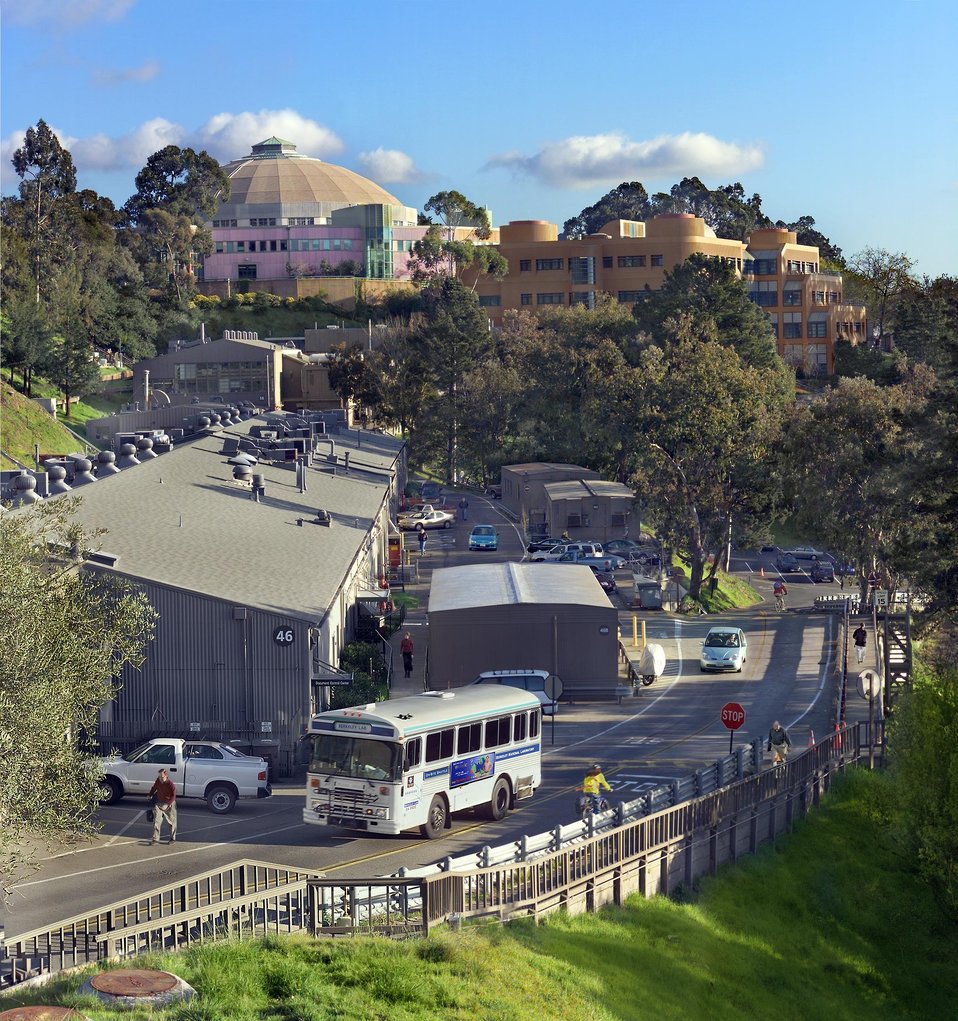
ROADS AND TRANSPORTATION AREA AT THE LAWRENCE BERKELEY NATIONAL LABORATORY, ADVANCED LIGHT SOURCE TO LEFT.

DOE'S LAWRENCE BERKELEY NATIONAL LABORATORY IN CALIFORNIA IS A LEADER IN SCIENCE AND ENGINEERING RESEARCH. THE LAB CONDUCTS UNCLASSIFIED RESEARCH ACROSS A WIDE RANGE OF SCIENTIFIC DISCIPLINES WITH KEY EFFORTS IN FUNDAMENTAL STUDIES OF THE UNIVERSE, QUANTITATIVE BIOLOGY, NANOSCIENCE, NEW ENERGY SYSTEMS AND ENVIRONMENTAL SOLUTIONS, AS WELL AS THE USE OF INTEGRATED COMPUTING AS A TOOL FOR DISCOVERY.